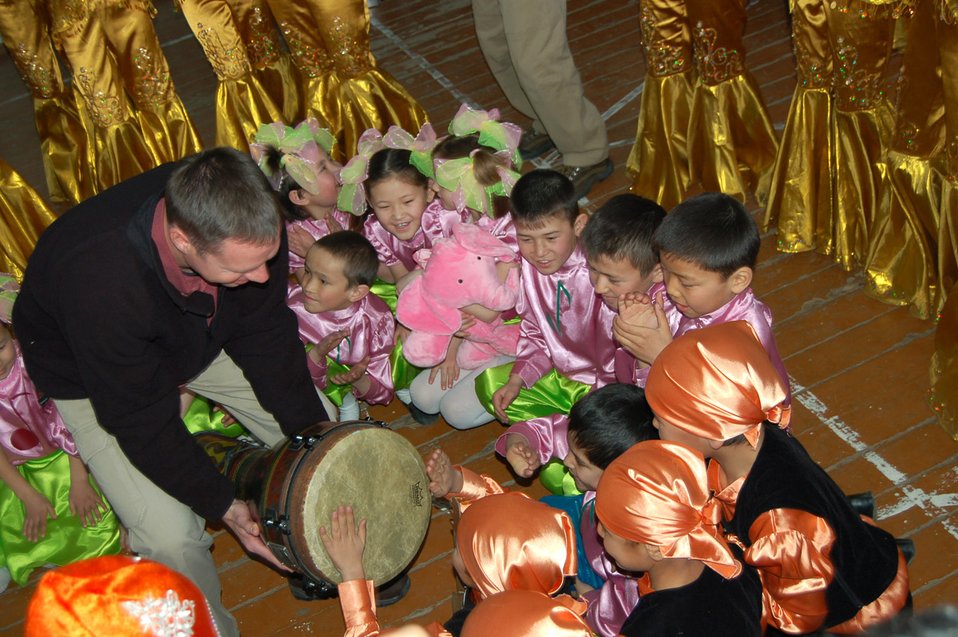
?Live Round,? helps bring gifts; music to school for the deaf

Master Sgt. Jeremy Laukhuf, a bass guitar player with U.S. Central Command Air Forces Band 'Live Round' lets children at the Bishkek Boarding School for the Deaf beat on the djimbe drum during one of the band's outreach visits to a local school. The children were able to feel the music through the vibrations in the floor and through touch. Live Round performed for Manas Air Base Airmen and local villages and schools during their eight-day trip to Kyrgyzstan.